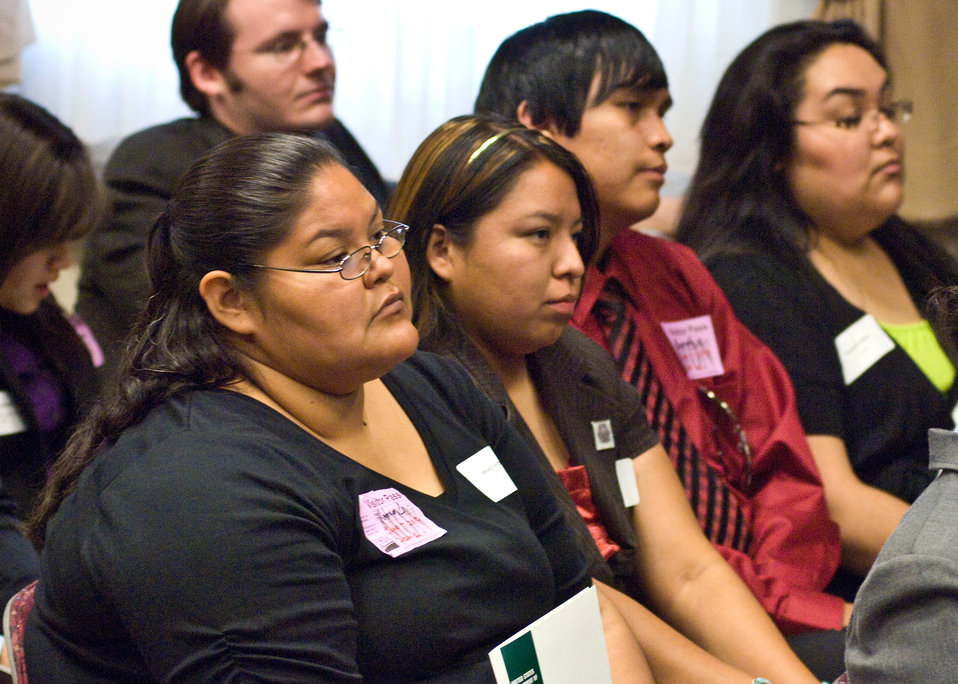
College students from USDA HACU and 1994 Tribal Colleges listen to speakers during the USDA HACU and 1994 Tribal College Summer Internship Orientation Program at the Department of Agriculture in Washington, DC, Monday, June 7, 2010. USDA Photo 10di1390-35.